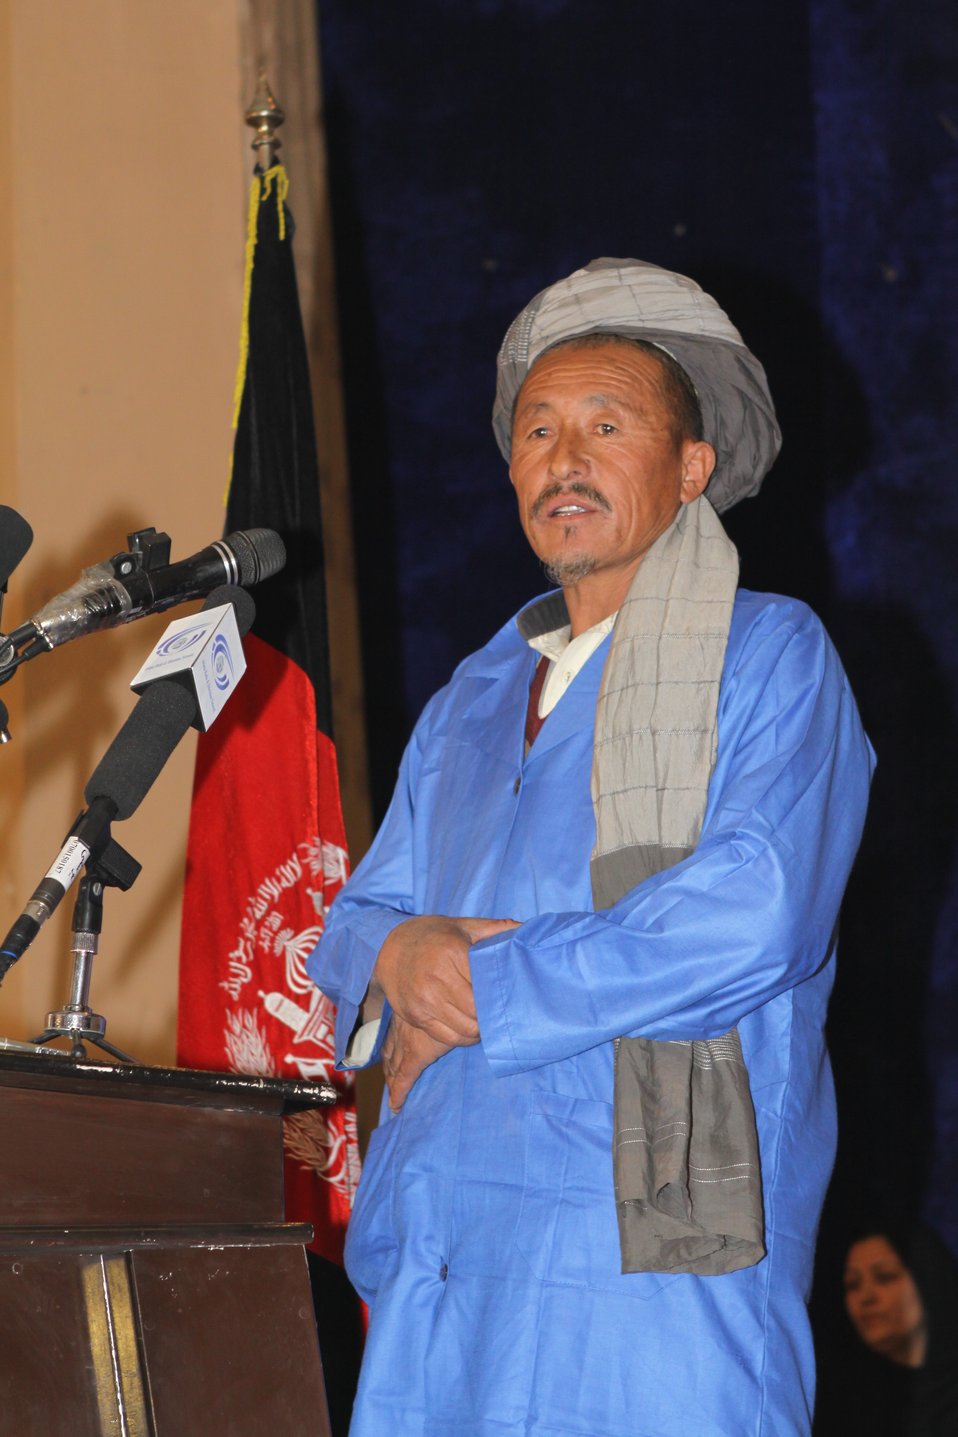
Community Health Workers Celebrated

Kabul, Afghanistan | December 5, 2010 — In support of the United Nations designated International Volunteer Day for Economic and Social Development, Afghanistan’s Ministry of Public Health celebrated its annual Community Health Worker Day today. Acting Minister of Public Health Dr. Suraya Dalil, USAID Senior Deputy Mission Director Robert Hellyer, other government officials, and international donors joined in recognizing the critical contribution of community health workers in Afghanistan and encouraging them to continue their voluntary support to their communities.
The event praised the contributions of the more than 22,000 volunteers throughout the country who deliver community level health-education, counseling, and services out of village health posts located in private homes. The Ministry of Public Health envisioned that community-based healthcare programs will actively encourage communities and families to adopt healthy lifestyles and behaviors, and provide families access to high quality and socially acceptable preventative medicine and life-saving services.
“We have 22,000 community health workers in Afghanistan that are able to implement the basic and standard medicines. They all have been trained through a job description,” said Minister Dalil. Addressing the health workers, she added, “I am proud and feel powerful that I have people like you.”
USAID-funded health projects collaborate closely with the Ministry of Public Health to improve the health and nutritional status of Afghans, provide quality primary healthcare, and promote healthy behaviors at the community and household-levels. USAID supported the training of more than 9,000 of the volunteer community health workers currently working in Afghanistan.
“On behalf of the American people, I congratulate the Community Health Workers for their diligence to gain the skills and knowledge necessary to serve their communities in this important role,” said USAID Senior Deputy Mission Director Hellyer. “USAID strongly supports community based health care and believes that quality community-based health services are essential to reaching Afghanistan’s Millennium Development Goals.”
To support the Basic Package of Health Services, USAID assisted in developing the community health worker training manual, helped train community health worker supervisors and master-trainers, facilitated in-service training, and produced and developed reporting tools, job aids, and education materials.